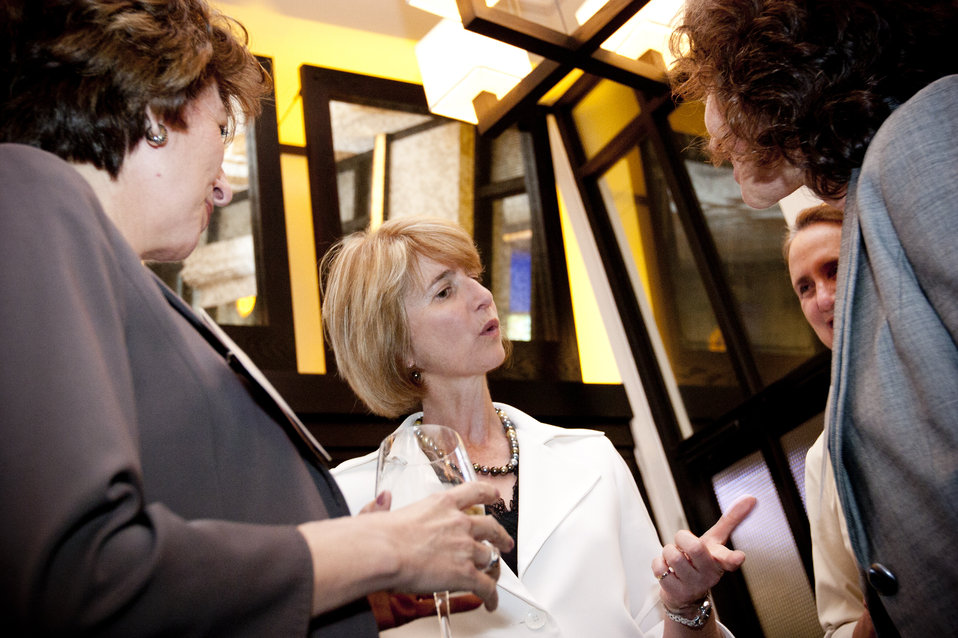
WomenandEnergy 13